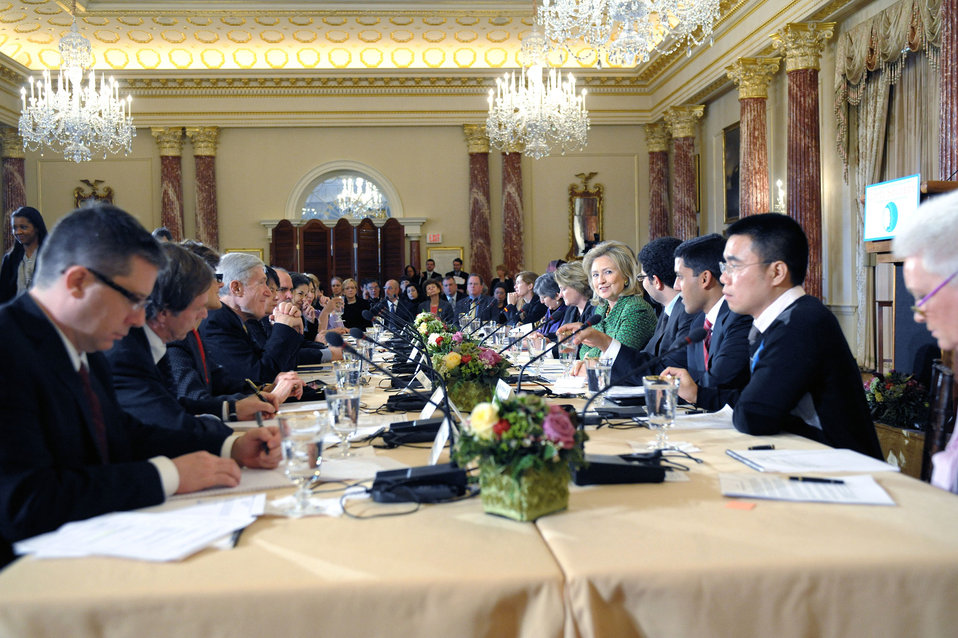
Secretary Clinton Meets With Civil Society Leaders

U.S. Secretary of State Hillary Rodham Clinton hosts the first ever Strategic Dialogue With Civil Society at the U.S. Department of State in Washington, D.C., on February 16, 2011.